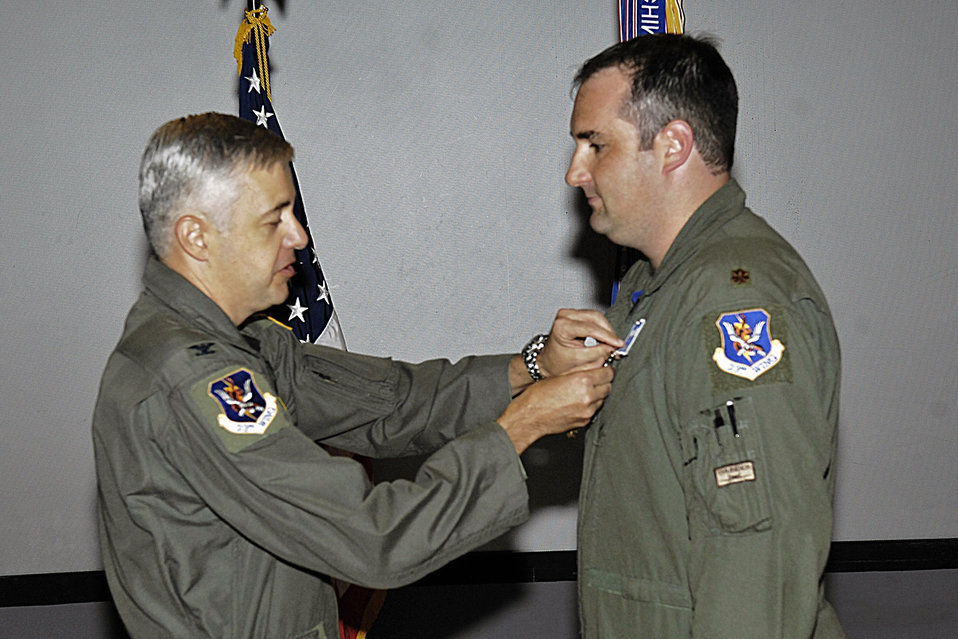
A-10 pilot awarded Distinguished Flying Cross

Col. Kenneth Todorov pins the Distinguished Flying Cross on Maj. Keith Wolak during an award ceremony at Pope Air Force Base, N.C., July 27. Major Wolak is an A-10 Thunderbolt II pilot with the 23rd Fighter Group at Pope AFB. Colonel Todorov is the 23rd Wing commander at Moody Air Force Base, Ga.